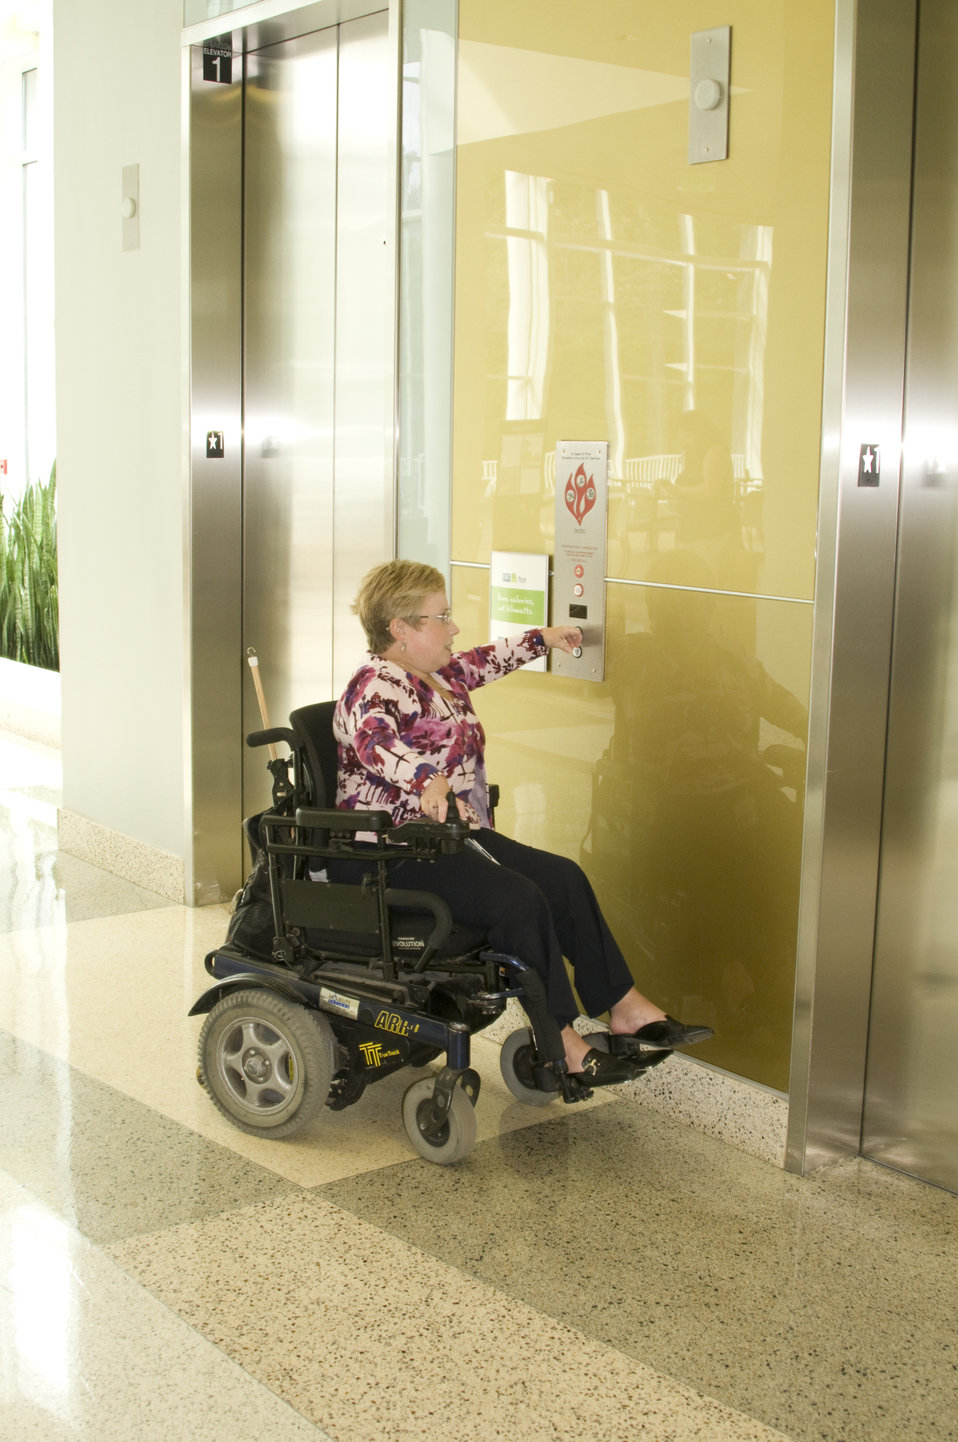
Seated in her wheelchair, the woman pictured here had reached the elevator doors inside a building on one of the Centers for Disease Control's (CDC) campuses in Atlanta, Georgia, and using her left hand, was pressing the easily-reachable button, which would hail the elevator that would take her to her desired floor. Note the low proximity chosen to locate the call and emergency buttons, suitable for anyone at any height.